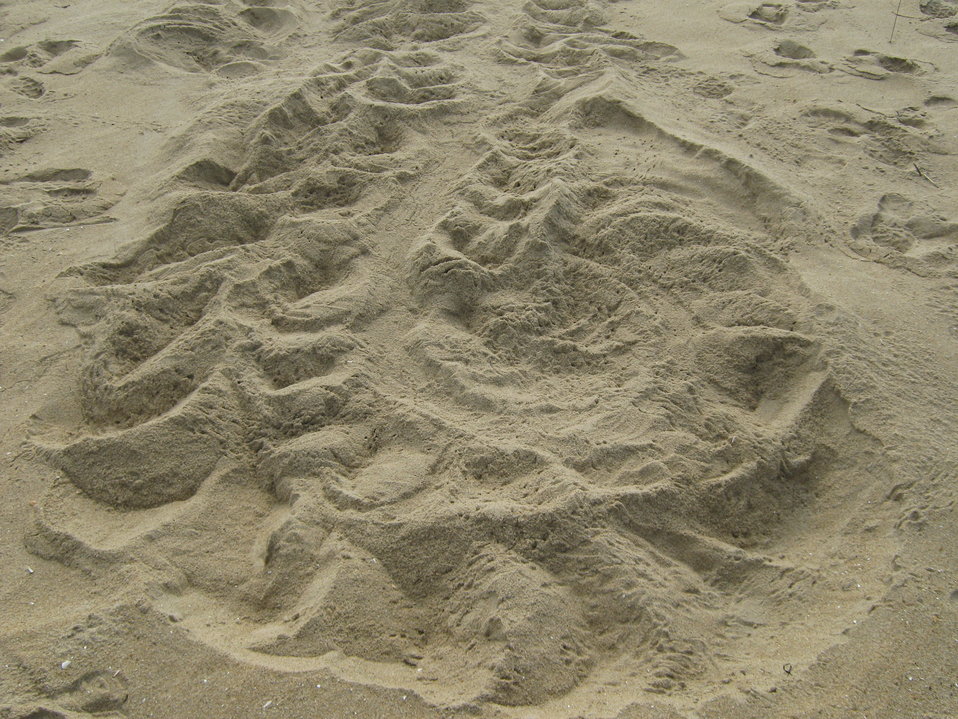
Sea turtle crawl loop at Back Bay National Wildlife Refuge in Virginia.